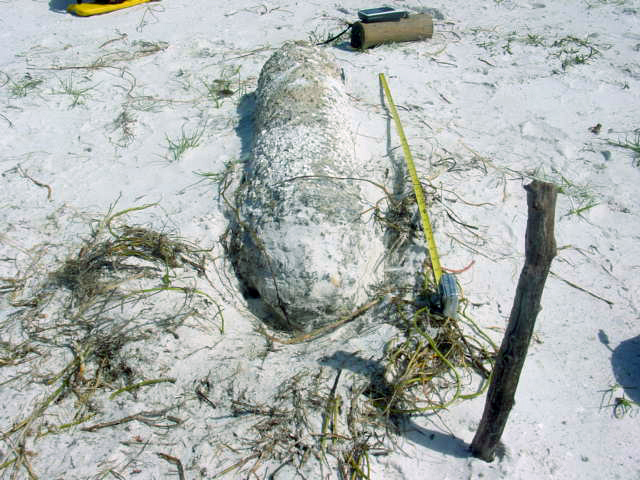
Airmen explode bomb found on Florida beach

PASSAGE KEY ISLAND, Fla. -- A World War II-era M46 photoflash bomb sits here Oct. 13. Airmen from the explosive ordnance disposal team at nearby MacDill Air Force Base destroyed the bomb after they decided it was too sensitive to move.